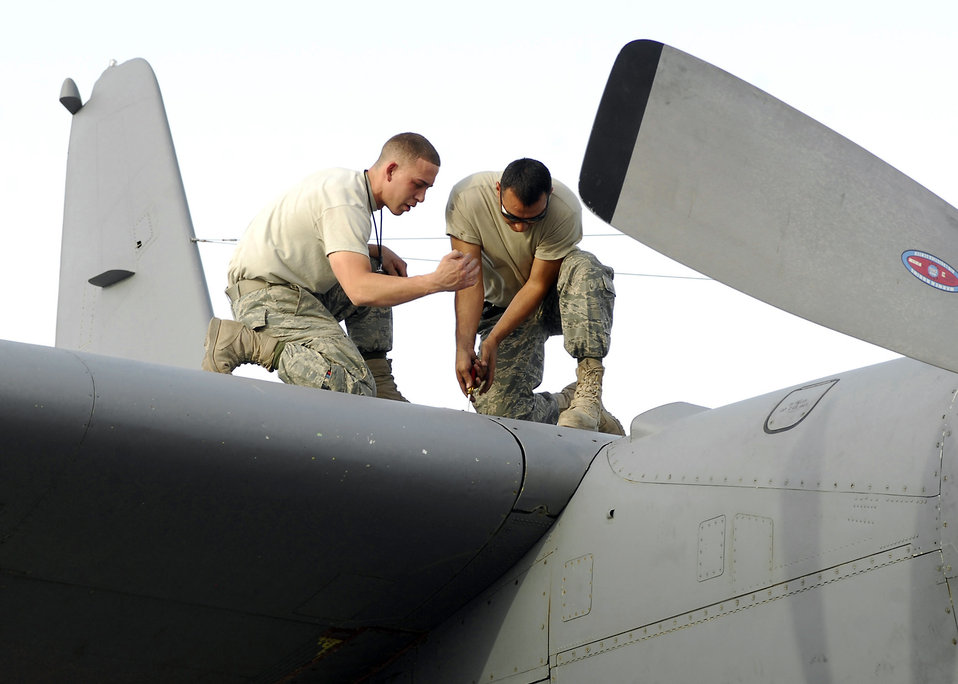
Airmen in EC-130H unit complete 2,000th combat mission

Tech. Sgt. Jose Rodriguez (right) assists Staff Sgt. Andres Jaramillo in securing bolts during a function check on the EC-130H Compass Call July 6 at Bagram Airfield, Afghanistan. Both are members of the 41st Expeditionary Aircraft Maintenance Unit and are deployed out of Davis-Monthan Air Force Base, Ariz.